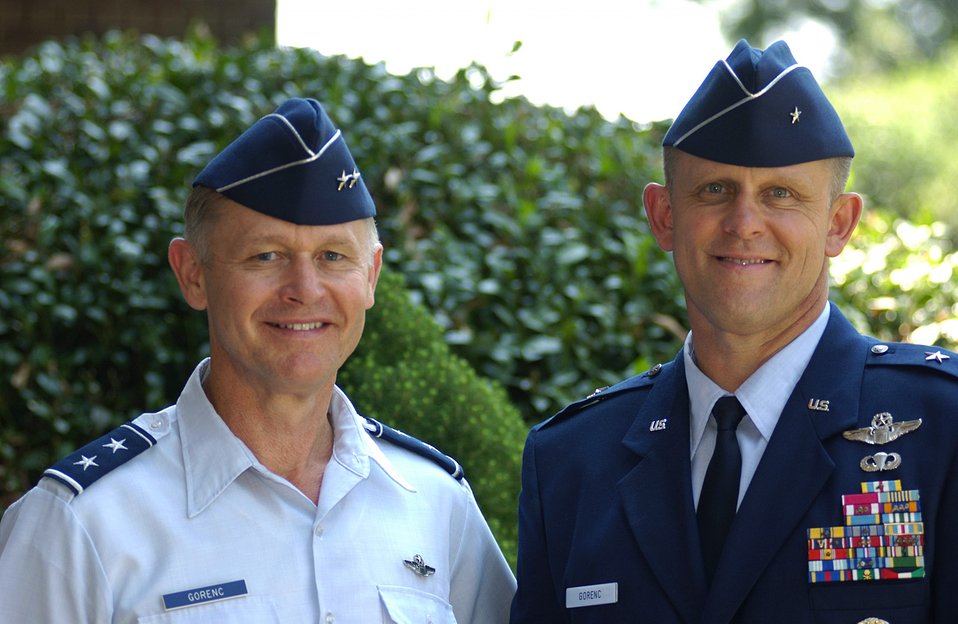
New one-star joins two-star brother

LANGLEY AIR FORCE BASE, Va. -- Maj. Gen. Stanley Gorenc (left) and his brother, Brig. Gen. Frank Gorenc, are two of 271 general officers in the active-duty Air Force of more than 350,000. The two-star general is director of operational capabilities requirements in Washington, and his younger brother will be the 332nd Air Expeditionary Wing commander at Balad Air Base, Iraq.